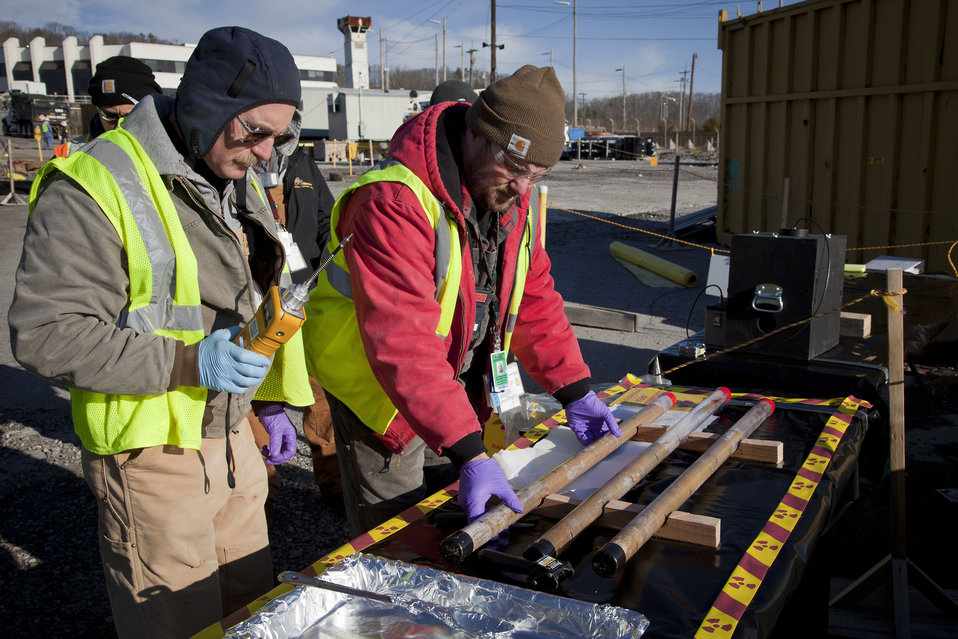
Skilled Workers Bruised by Recession Find New Start in Oak Ridge Recovery Act Work

Efforts to clean up waste from the Manhattan Project and the Cold War are under way at the Y-12 National Security Complex. The seven projects there funded by $216 million from the Recovery Act are providing work for more than 1,500 Americans, many of whom had struggled in the recent recession.

In addition to the work at Alpha 5 and Beta 4, Recovery Act projects at Y-12 include the West End Mercury Area storm sewer cleanup project, removal of soil contaminated with mercury, and the cleanup of a 7-acre scrap yard. In January 2011, Recovery Act workers completed the demolition of Building 9211 at Y-12, which reduced the footprint of the Cold War legacy by more than 83,000 square feet.